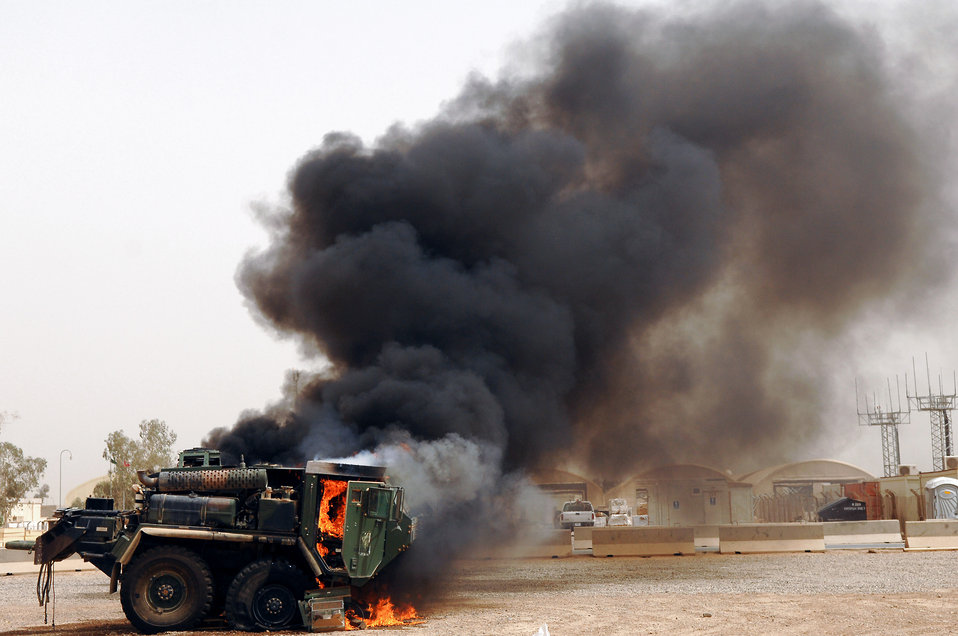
Fire it up

Members of the 332nd Expeditionary Civil Engineer Squadron and 8th Ordnance Company fire department set a vehicle on fire to practice practical application of combat fire suppression with bumper and roof-mounted turret hoses May 19 at Balad Air Base, Iraq.